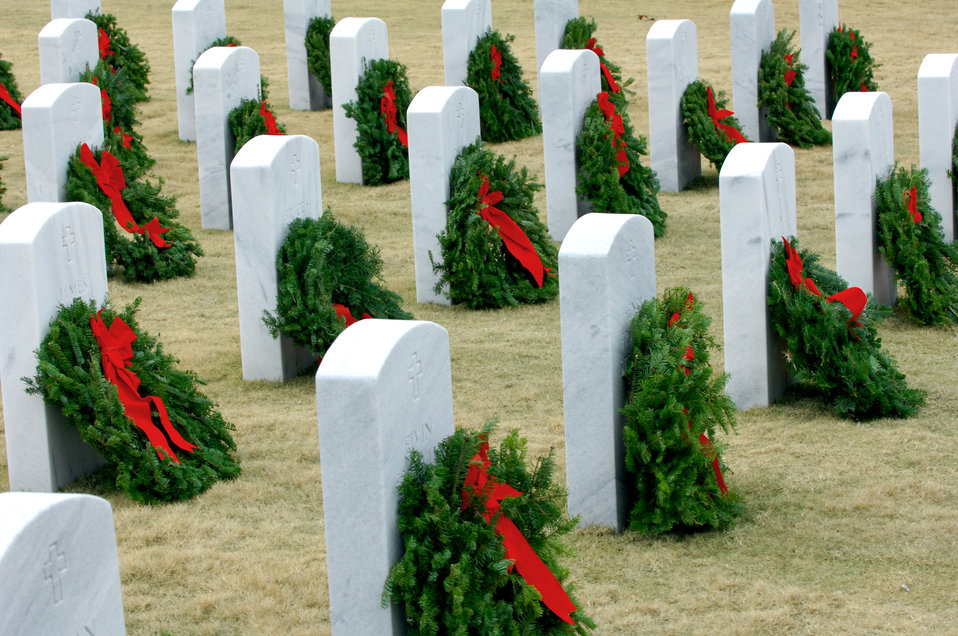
Wreaths Across America

Hundreds gathered to lay wreaths on the tombstones of those who have served our country during the Wreaths Across America ceremony Dec. 11, 2010, at Fort Jackson National Cemetery in Columbia, S.C. The ceremony was held to remember our veterans who have passed and honor those who are serving and have served. The ceremony included a memorial presentation, World War II wreath laying, recognition of prisoners of war, those still missing in action and Merchant Marines, a salute by a cannon battery and buglers.